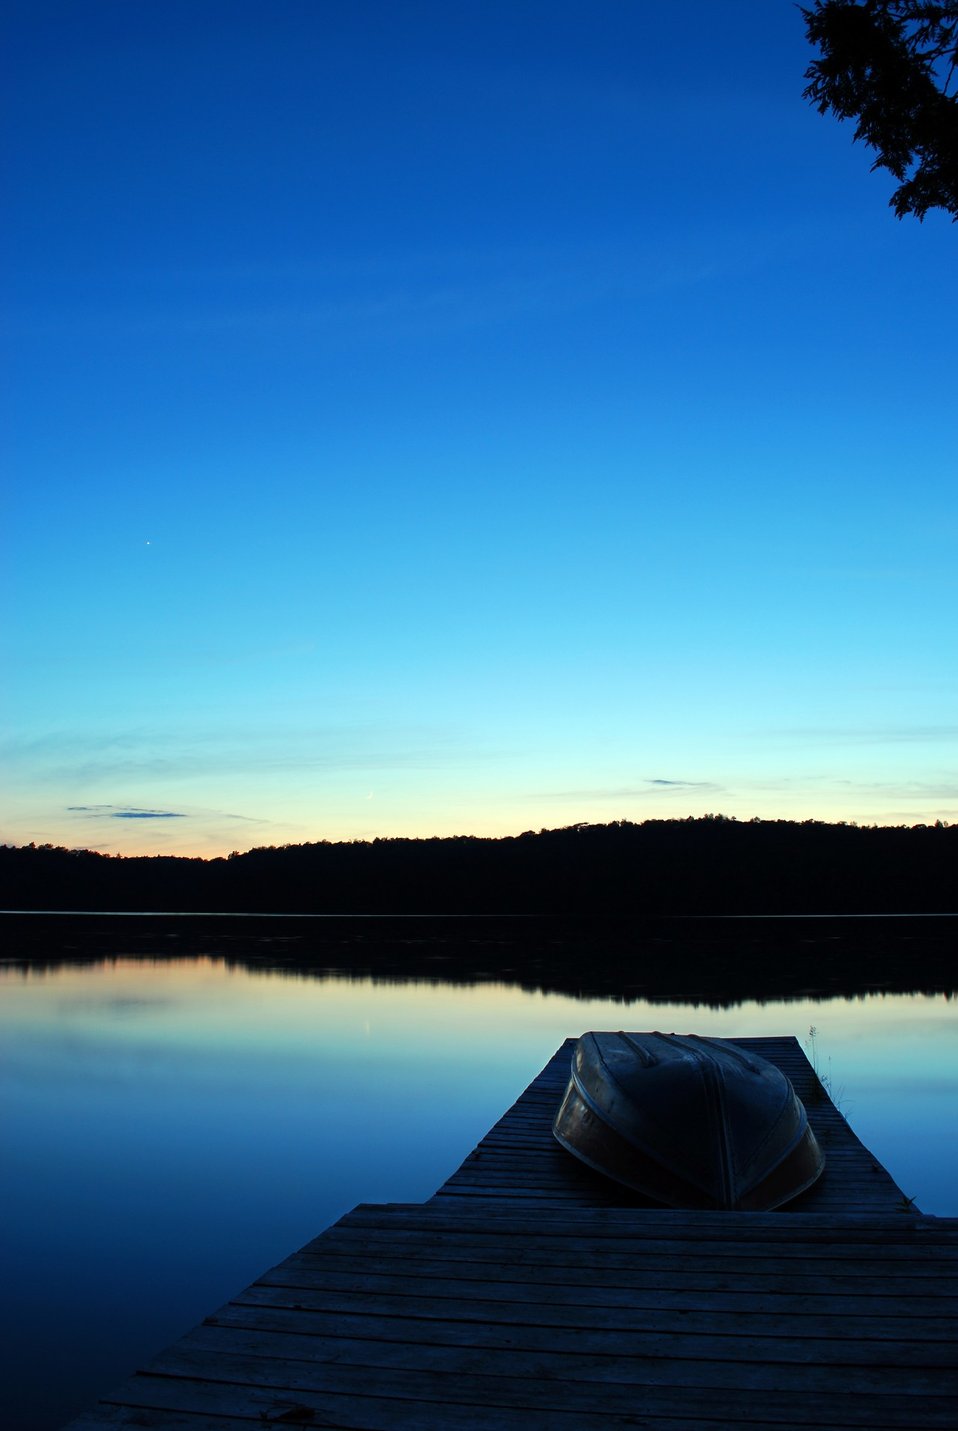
Twilight over lake 2

Twilight over lake.